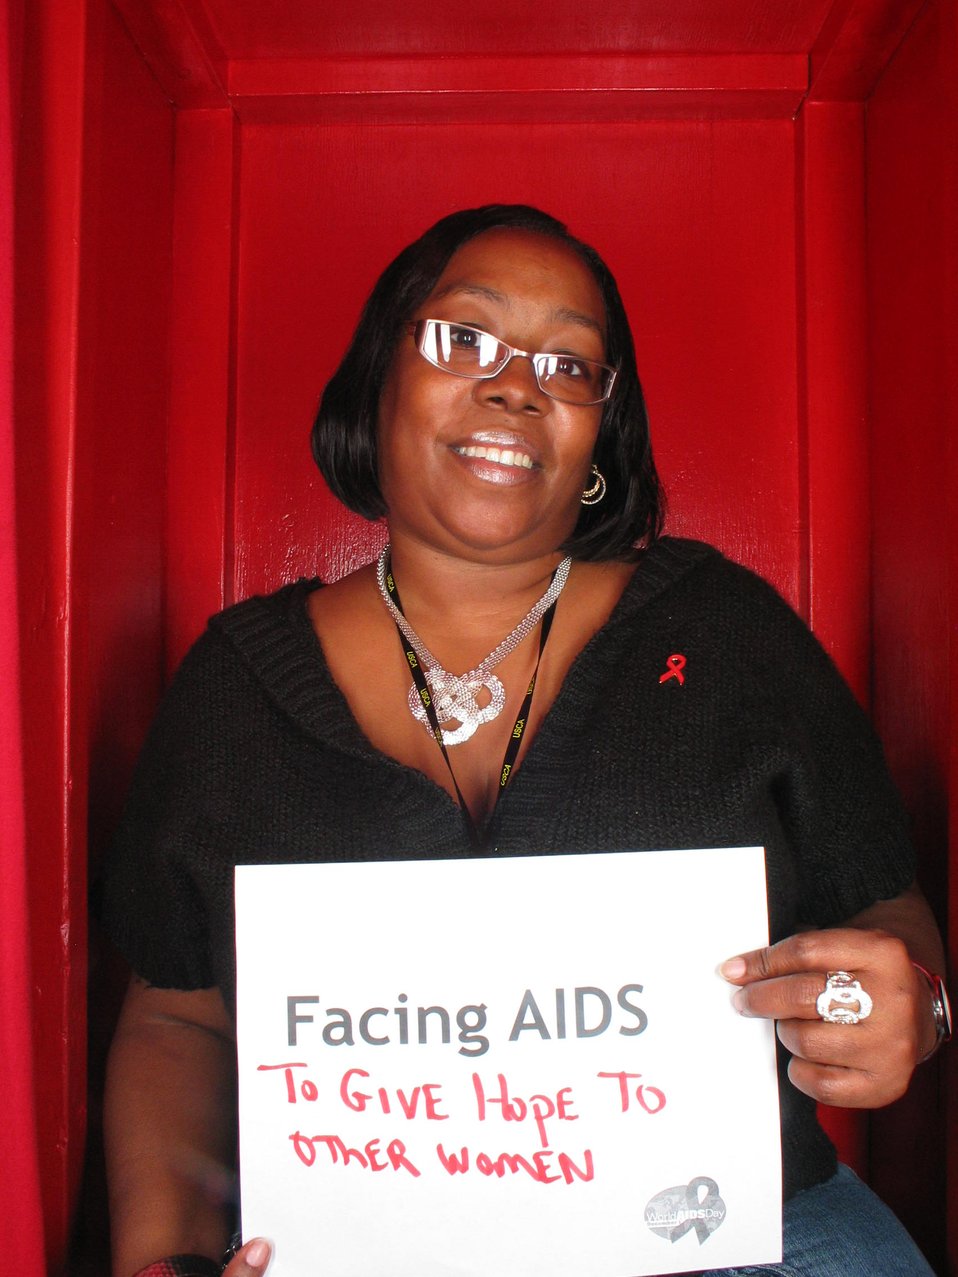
Facing AIDS to give hope to other women